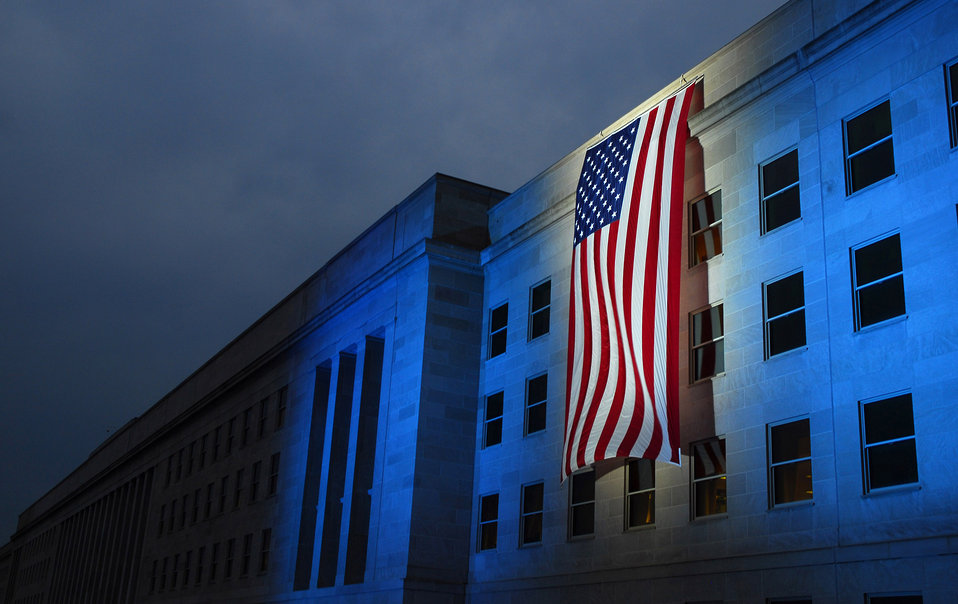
We remember

A memorial flag is illuminated near the spot where American Airlines Flight 77 crashed into the Pentagon on Sept. 11, 2001.